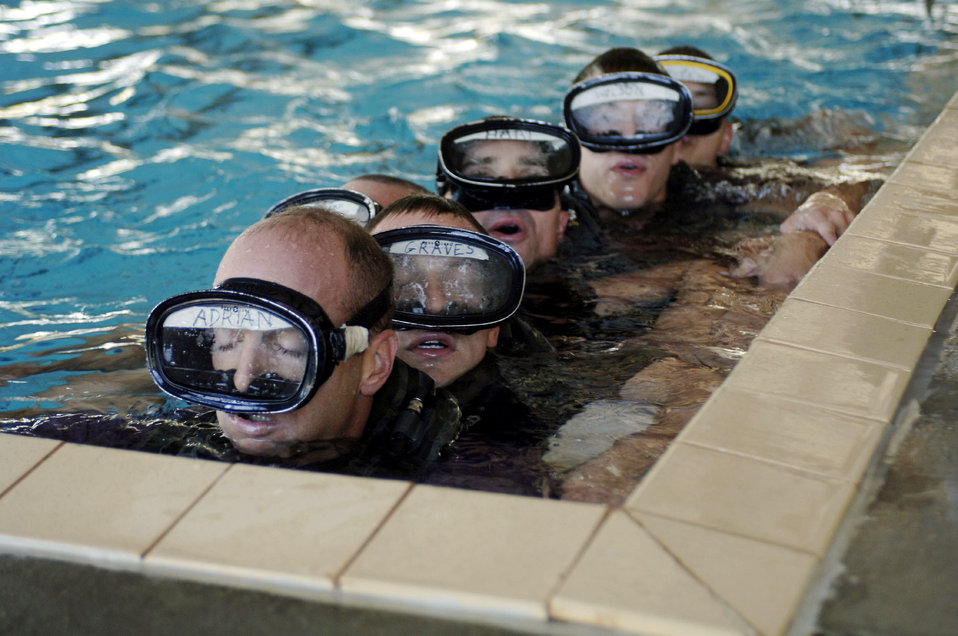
Creating CROs

MOODY AIR FORCE BASE, Ga. (AFPN) -- Six combat rescue officer candidates huddle in the corner of a indoor pool as part of the water confidence test during a recent CRO selection board.